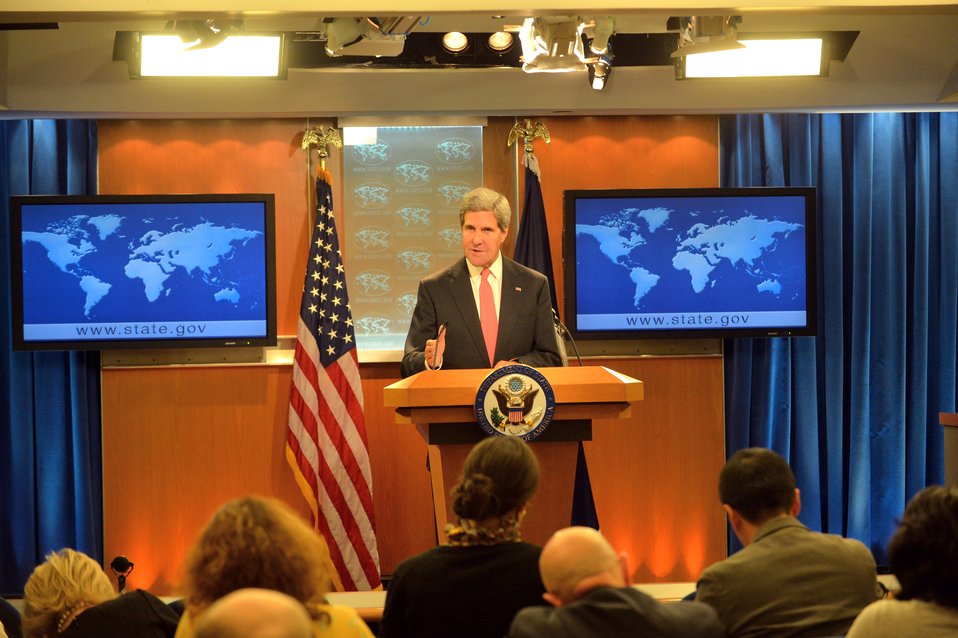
Secretary Kerry Makes a Statement to the Press on Syria and the UN

U.S. Secretary of State John Kerry makes a statement to the press on Syria and the United Nations at the U.S. Department of State in Washington, D.C., on September 19, 2013.